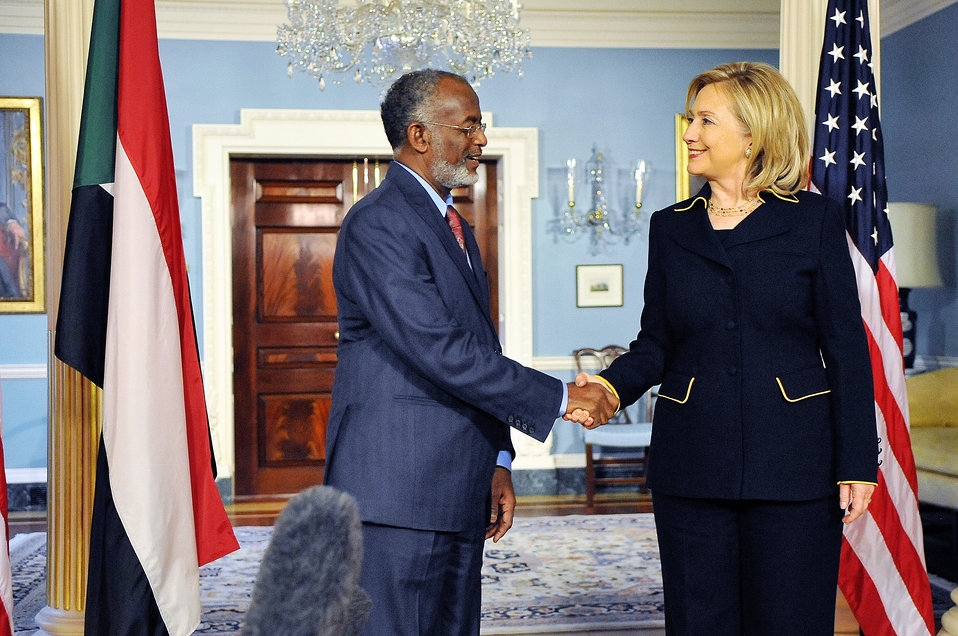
Secretary Clinton Shakes Hands With Sudanese Foreign Minister Karti

U.S. Secretary of State Hillary Rodham Clinton shakes hands with Sudanese Foreign Minister Ahmen Ali Karti at the U.S. Department of State in Washington, D.C., on January 26, 2011.